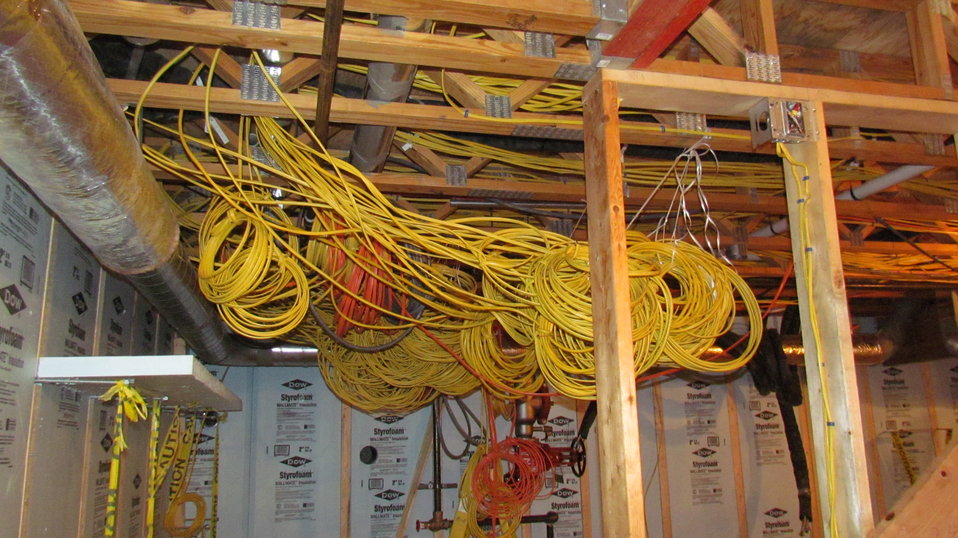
As a result of numerous electrical circuits within the facility to accommodate independent control of various devices, the quantity of electrical wiring is much greater that that found in a typical residence.